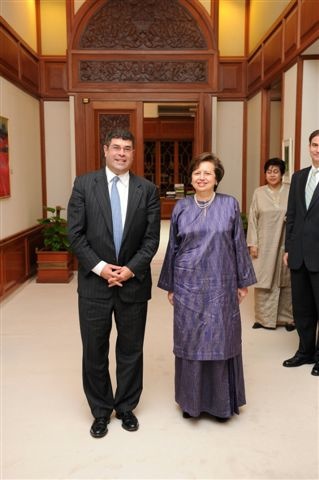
Deputy Secretary Wolin's Trip to the Pacific Rim

Deputy Secretary Neal Wolin and Malaysian Central Bank Governor Tan Sri Dr. Zeti Akhtar Aziz.